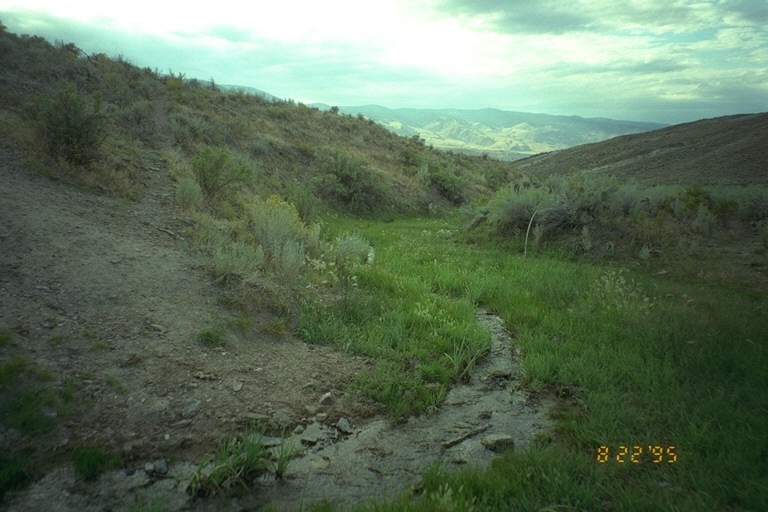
Riparian area Public Lands Salmon Field Office UCSC Upper Columbia Salmon Clearwater District